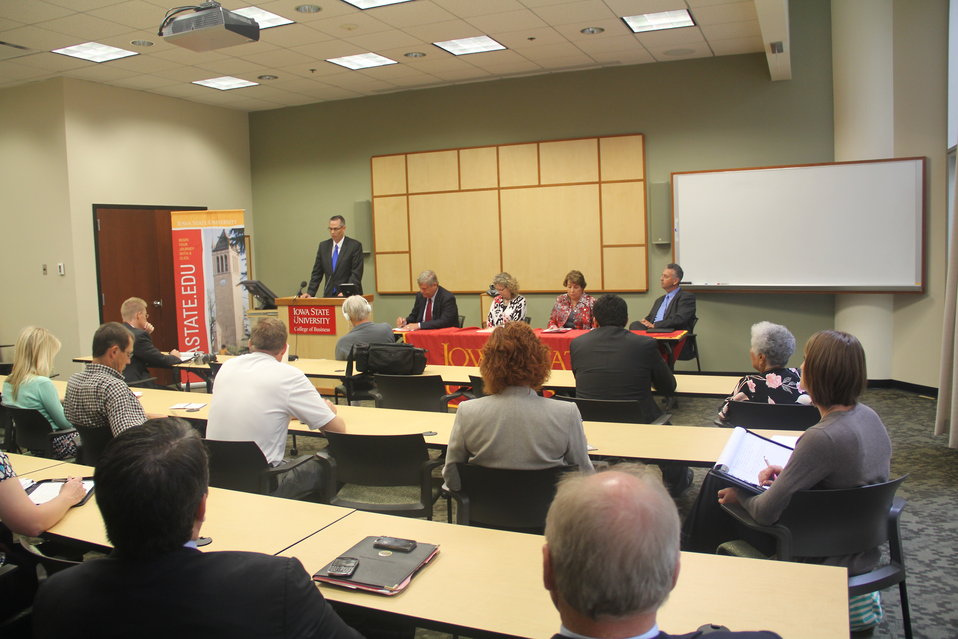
Jay Byers, chief executive officer of the Greater Des Moines Partnership is speaking at a roundtable discussion on immigration reform at Iowa State University in Des Moines, IA on Friday, Aug. 30, 2013. (L to R Agriculture Secretary Tom Vilsack, Iowa State University College of Agriculture and Life Sciences Dean Dr. Wendy Wintersteen, DuPont Pioneer corporate counsel Helen Adams, and Greater Des Moines Partnership Chief Executive Officer Jay Byers and Rob Wonderlich, dairy farmer from Ollie, IA.)